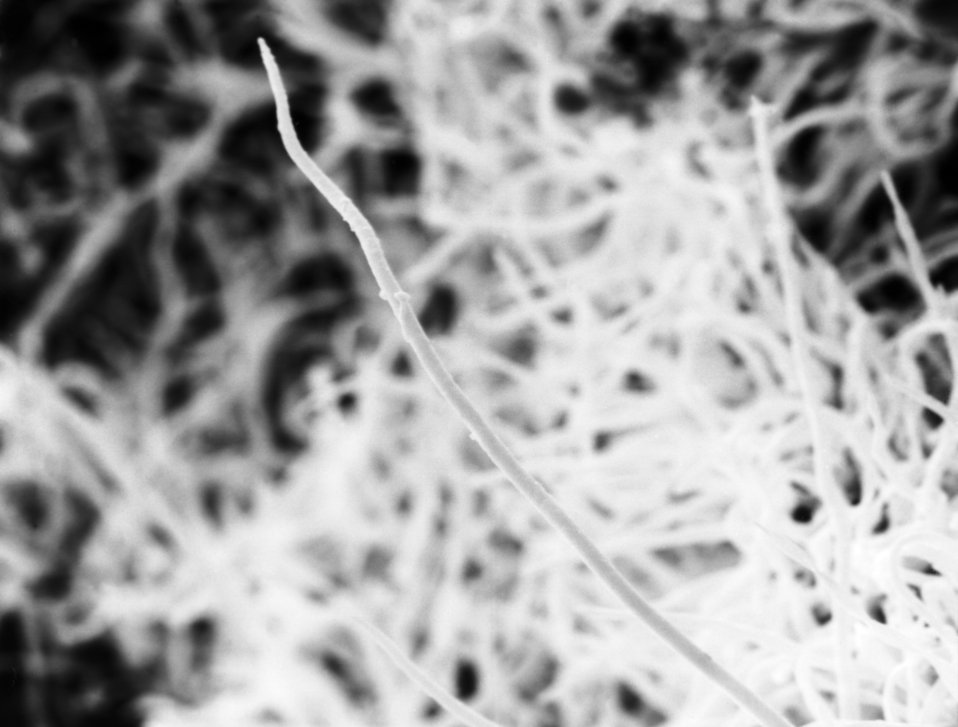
This scanning electron micrograph (SEM) shows the surface topography of a red raspberry drupelet, Rubus strigosus.